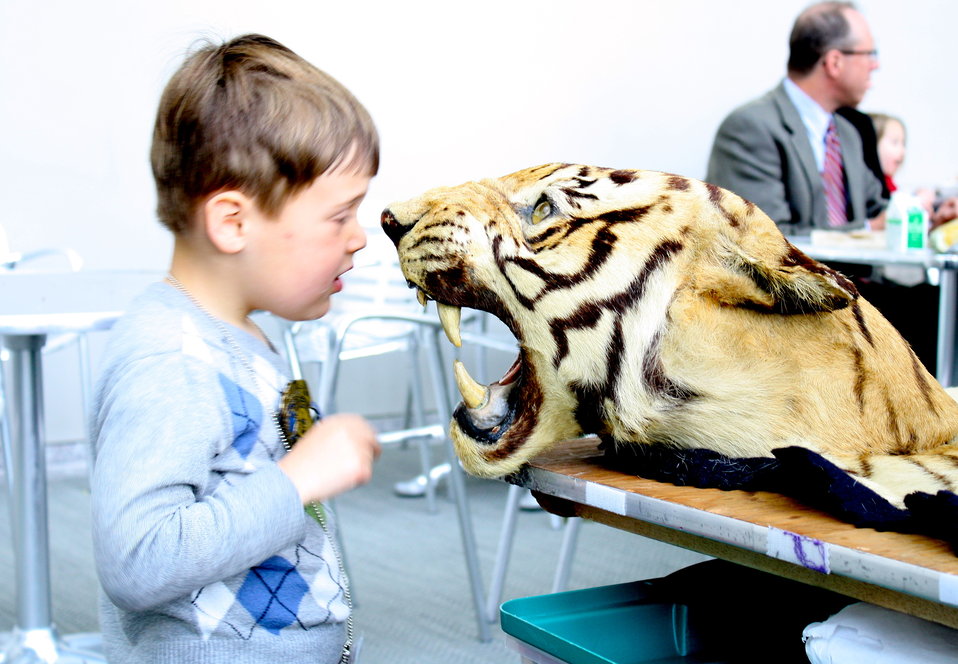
Boy and Tiger Head